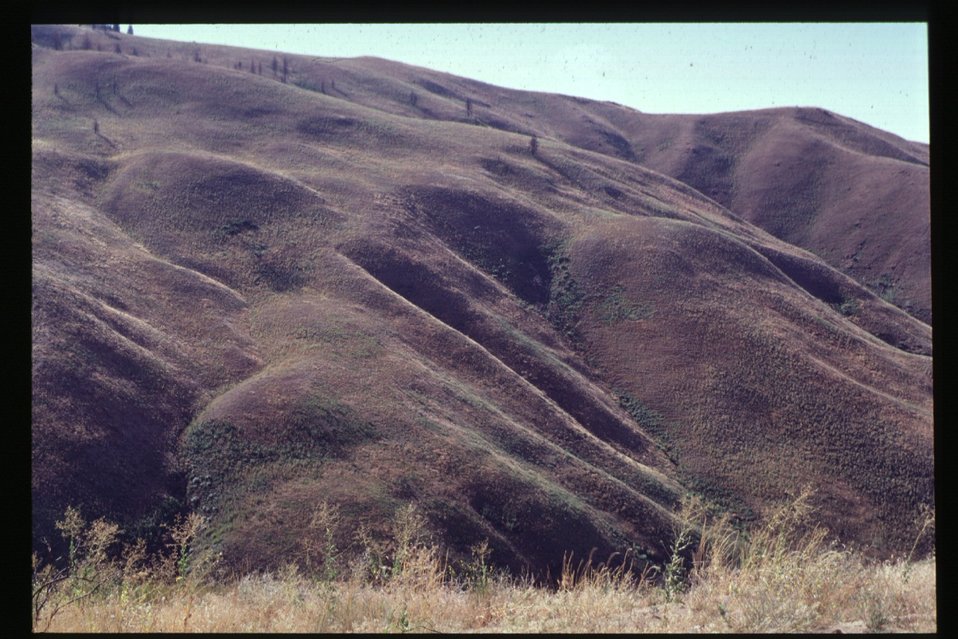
8th Street Fire Four Rivers Field Office LSRD Lower Snake River District